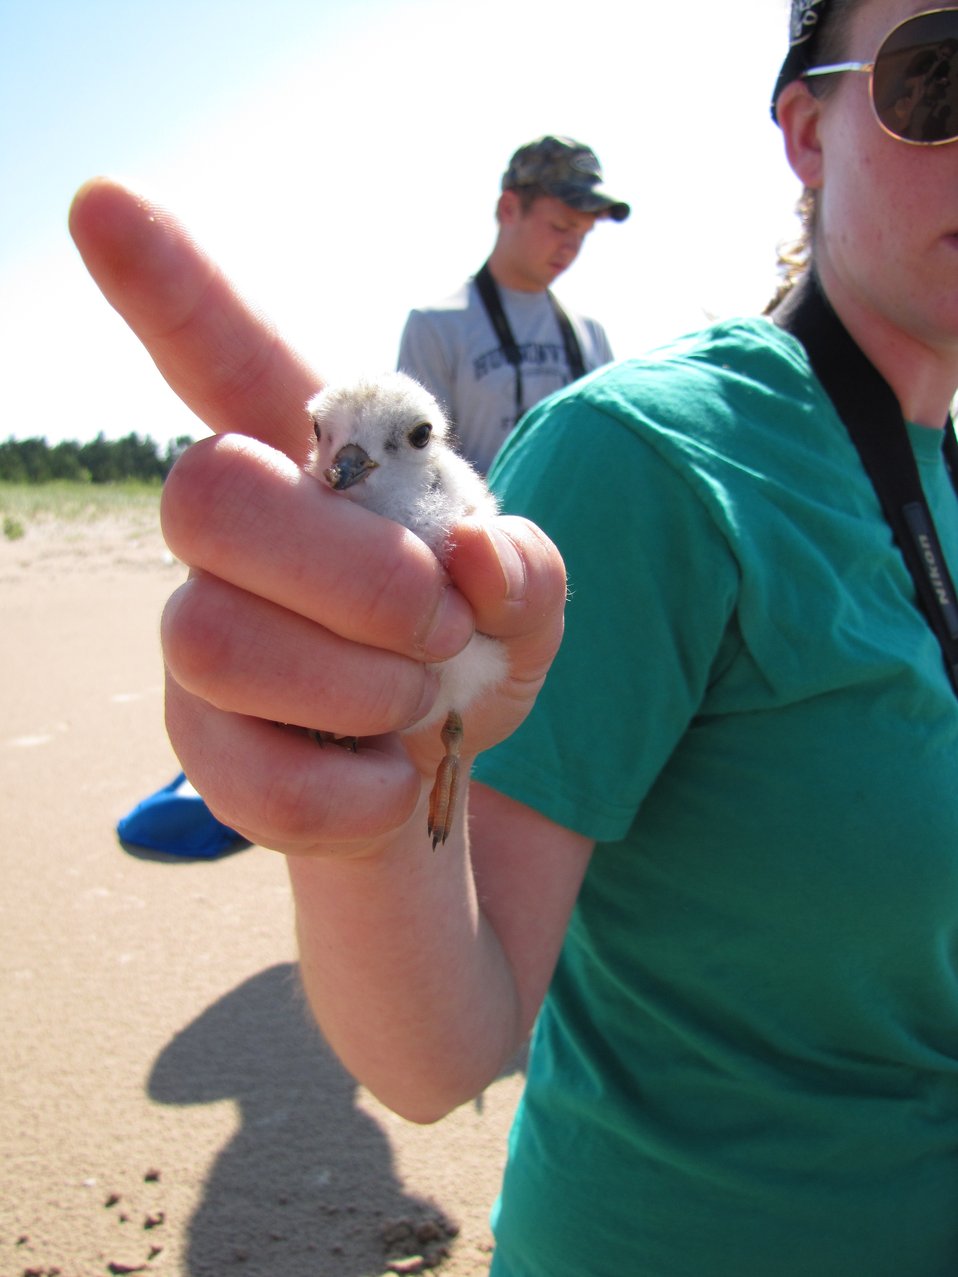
Piping plover chick at Seney National Wildlife Refuge.